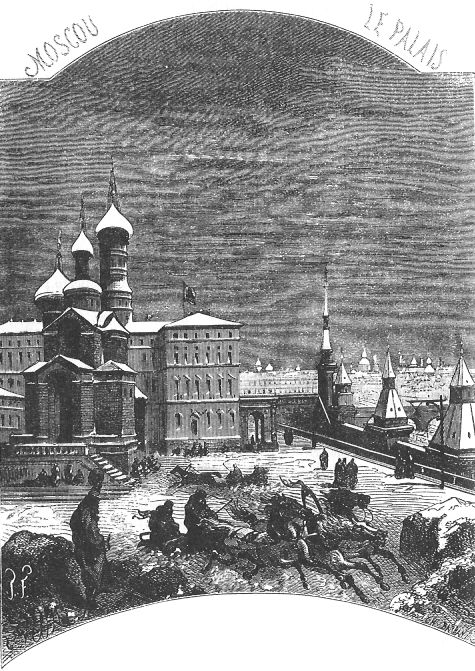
An illustration from the novel 'Michael Strogoff: The Courier of the Czar' by Jules Verne drawn by Jules Férat. Polski: Ilustracja powieści Juliusza Verne'a 'Michał Strogow, kurier carski' autorstwa Julesa Férata. Français : 'Michel Strogoff. Le courier du tzar', Jules Férat.